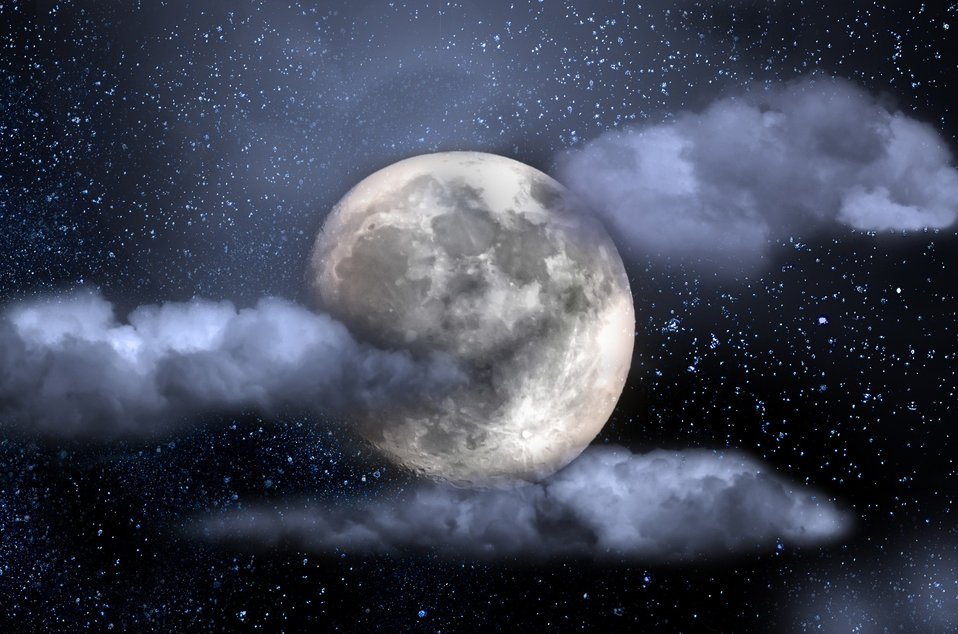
Night sky with moon and stars.